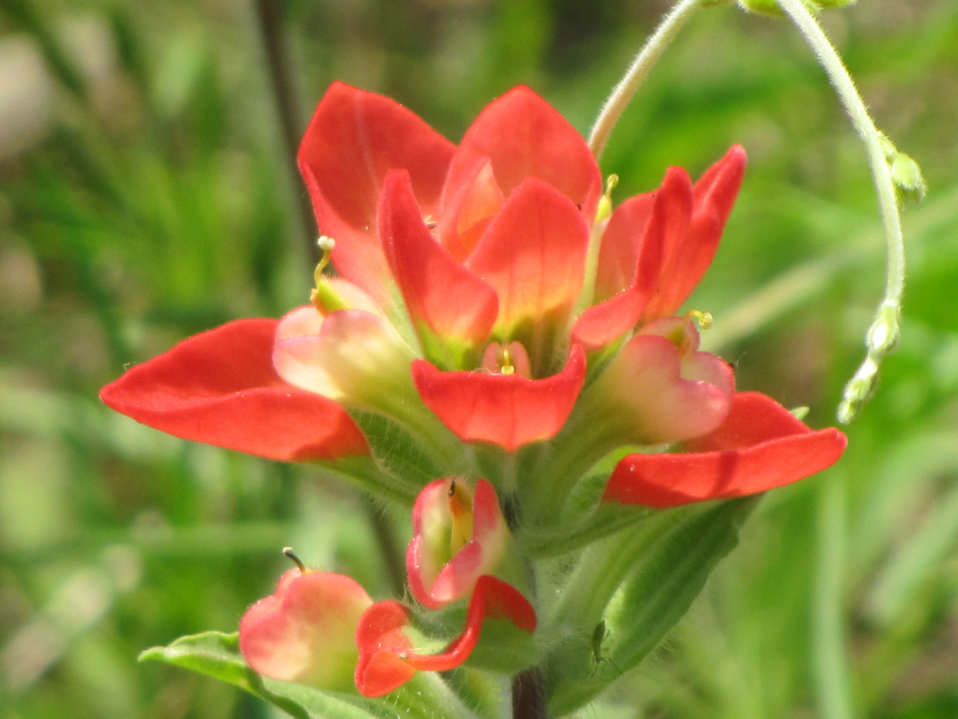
Indian paint brush

Castilleja indivisa,Wichita Mountains Wildlife Refuge.